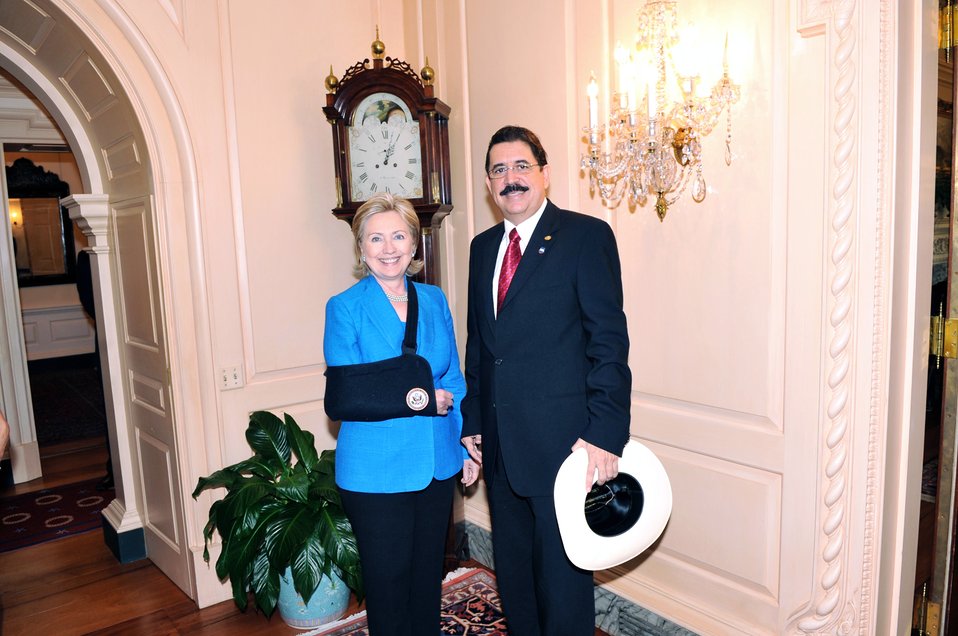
Secretary Clinton Welcomes Honduran President

U.S. Secretary of State Hillary Rodham Clinton welcomes Honduran President Jose Manuel Zelaya to the U.S. Department Department of State in Washington, DC July 7, 2009.